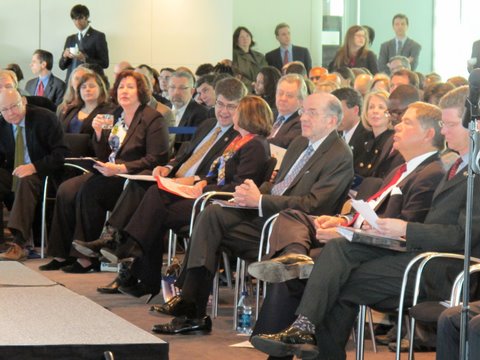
VIP's and leaders from the U.S. Congress, the FCC and Knight Foundation at America's Digital Inclusion Summit at The Newseum, March 9, 2010.